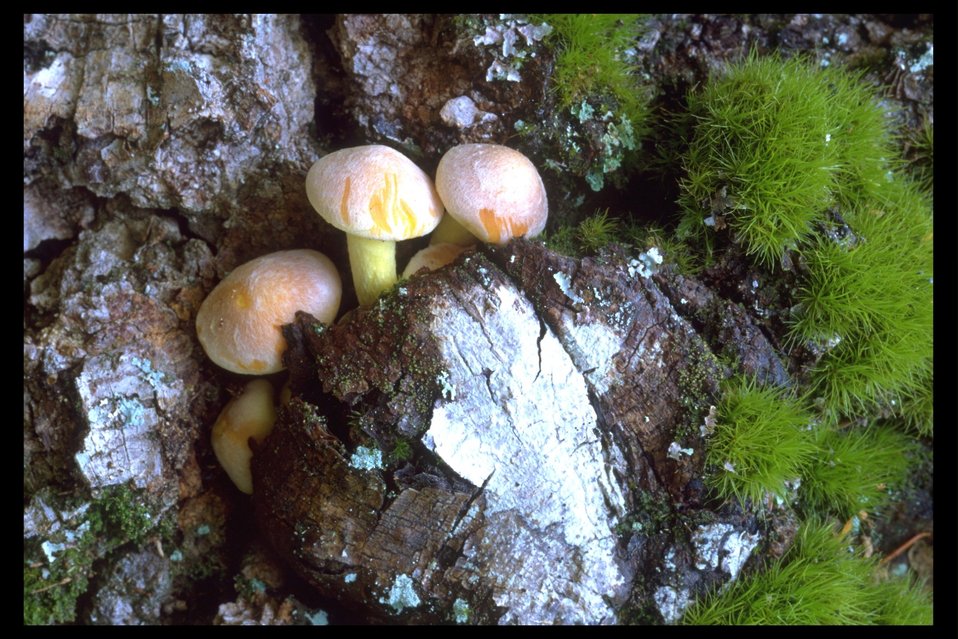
Mushrooms on bark of standing fir tree along Rogue River Trail near Prospect, OR.